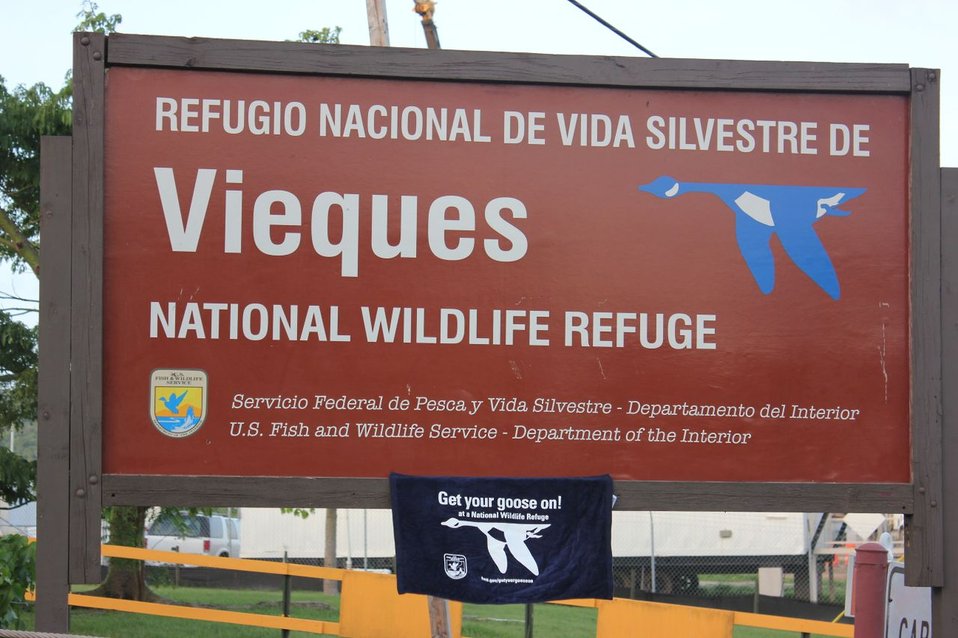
Vieques National Wildlife Refuge is located on the island of Vieques, several miles off the main island of Puerto Rico.

The refuge contains several ecologically distinct habitats including; beaches, coastal lagoons, mangrove wetlands, and upland forested areas. Some of the best examples of sub-tropical dry forest in the Caribbean can be found on refuge lands.

The marine environment surrounding the refuge contains coral reefs and sea grass beds.

The refuge and its surrounding waters are home to at least two plants and eight animals on the Federal endangered species list including; the West Indian manatee, the Brown Pelican, and four species of sea turtles.